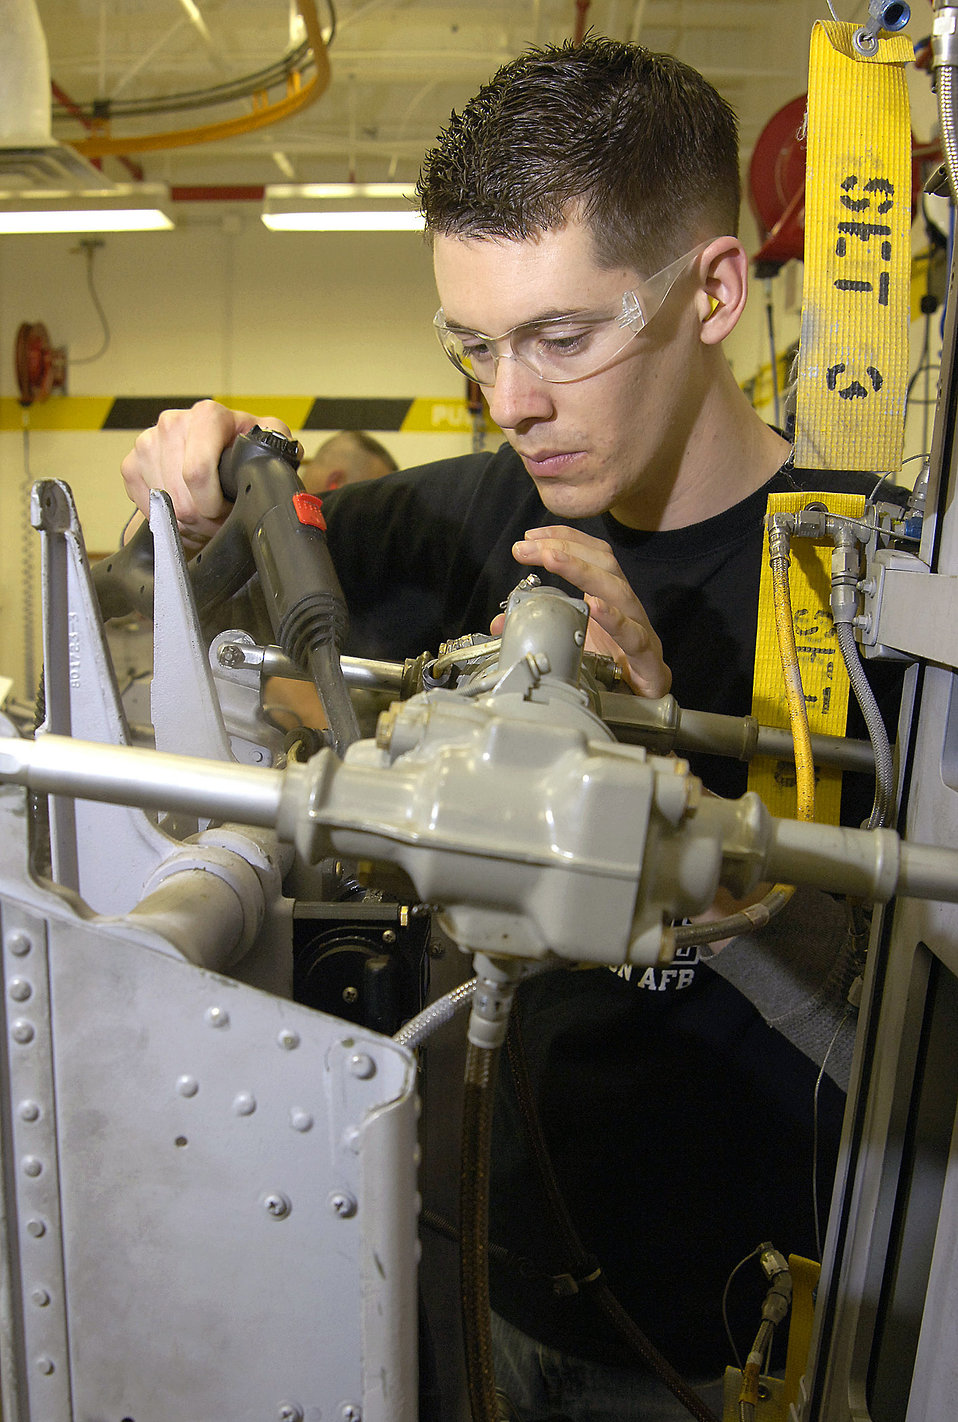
No margin for error at Tinker bomber egress shop

Brian Baker steam cleans a B-52 Stratofortress pilot's ejection seat in the March 2 at the egress shop at Tinker Air Force Base, Okla. The seat came into service 21 years before the technician was born.